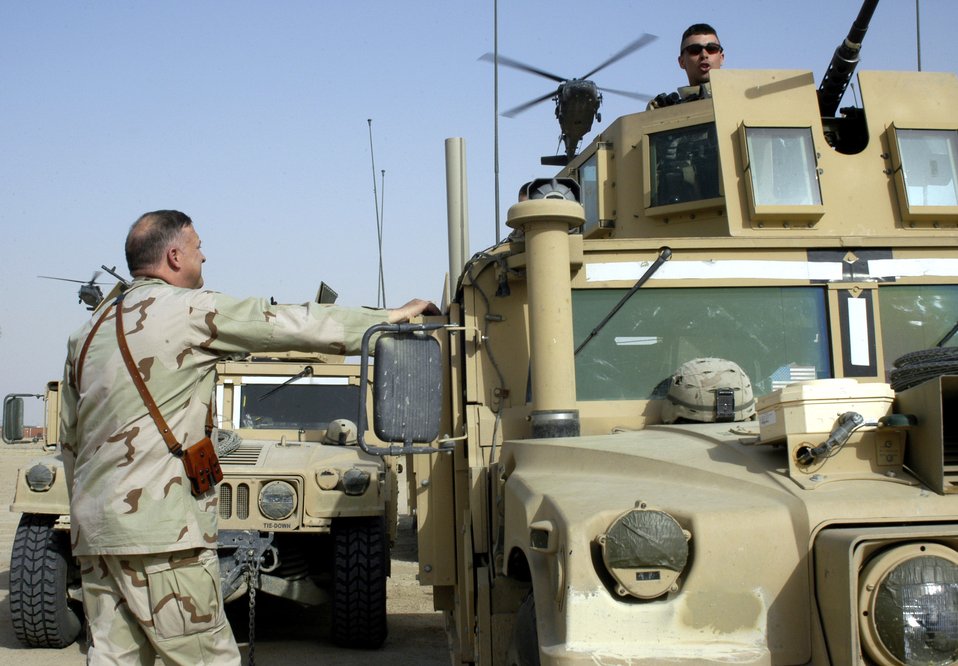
CENTAF leaders visit Airmen at nontraditional places

Lt. Gen. Gary L. North receives a briefing from an Airman of the 586th Expeditionary Security Forces Squadron April 20 at Camp Bucca, Iraq. Camp Bucca is one of the many places in the U.S. Central Command Air Forces area of responsibility where Airmen are doing nontraditional jobs supporting the war on terrorism. General North is the CENTAF commander.